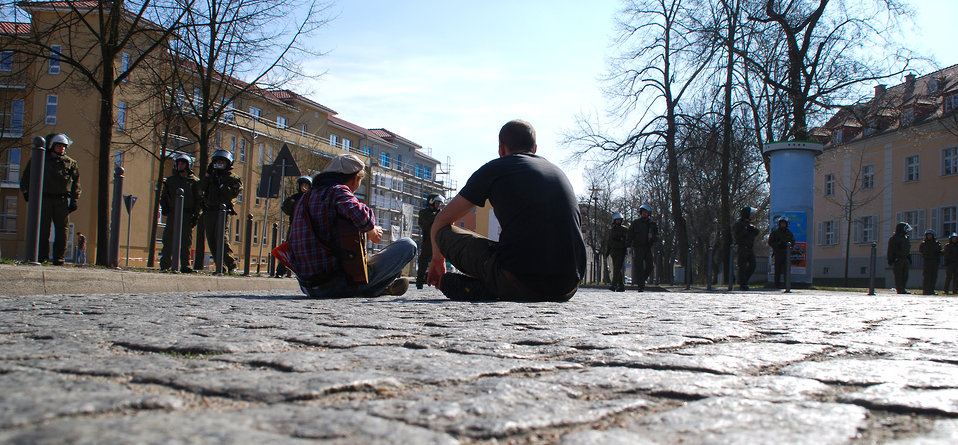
Proteste gegen den Nazi-Aufmarsch am 24.3.2012 in Frankfurt (Oder)